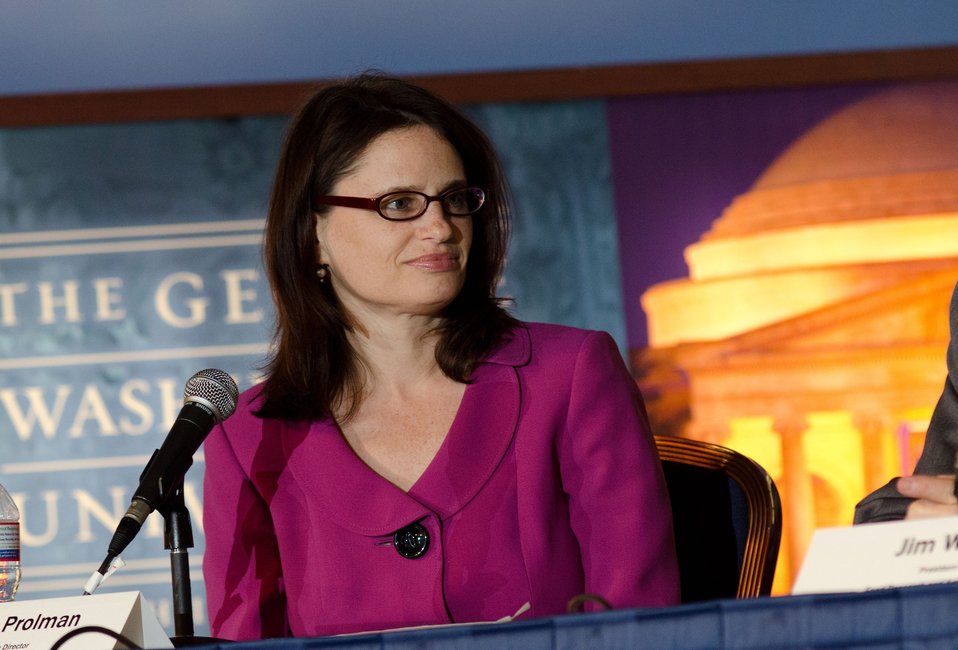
National Sustainable Agriculture Coalition Executive Director Susan Prolman, made opening remarks before a question and answer session, during the “Shaping the Farm Bill for a Sustainable Future” Forum in the Jack Morton Auditorium, at the Trachtenberg School of Public Policy and Public Administration, on the George Washington University campus in Washington, D.C., on Thursday, March 1, 2012.